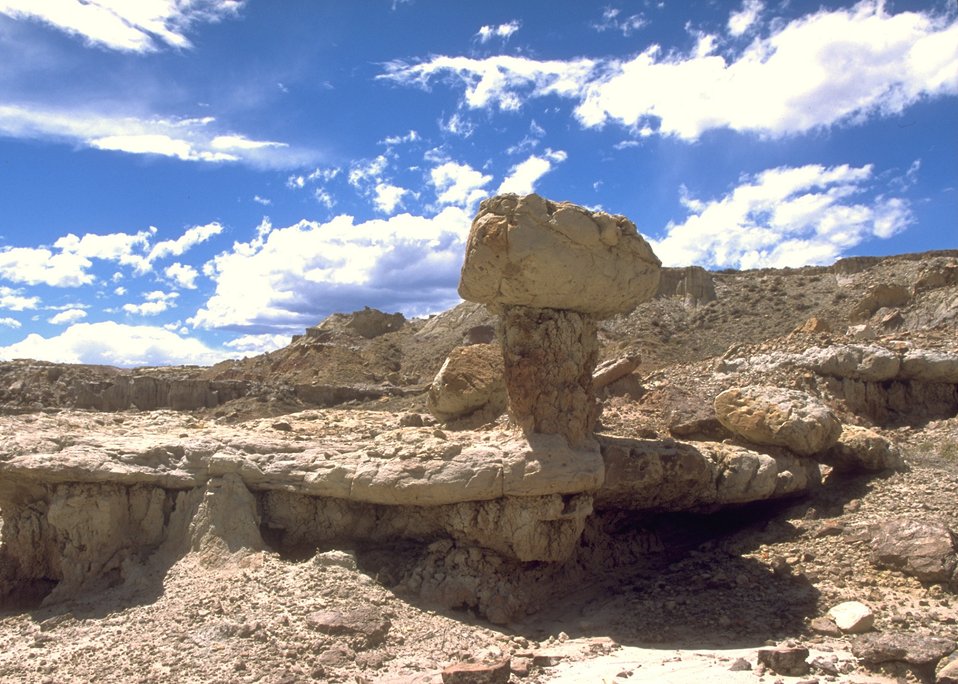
Gooseberry Interpretive Area, Worland Field Office.